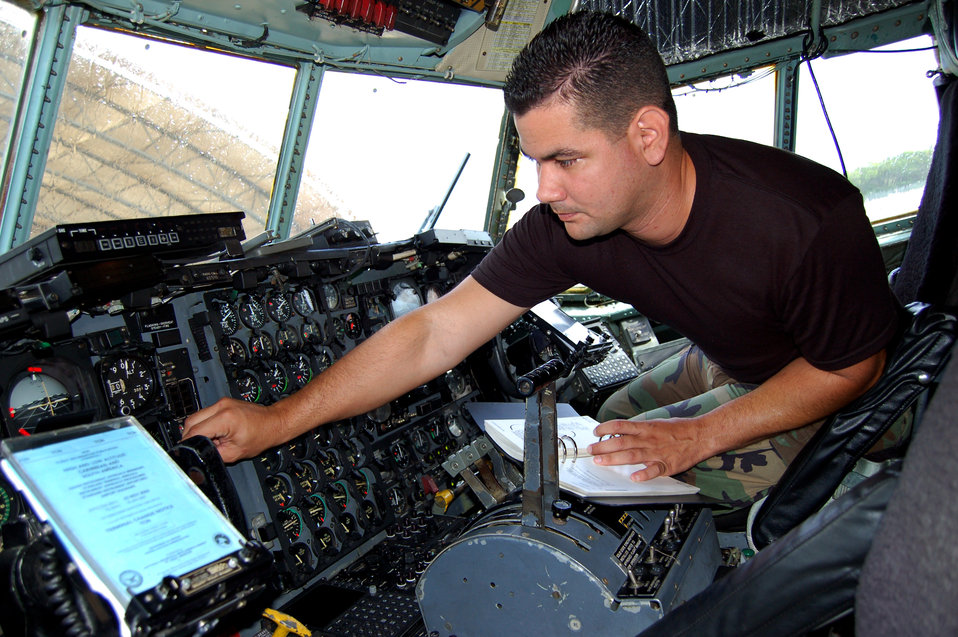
Puerto Rico Airmen support two wars

Senior Airman Michael Ortega checks the guages and autopilot on a C-130 Hercules Dec. 15 at Mu?iz Air National Guard Base, Puerto Rico. The avionics instruments and flight controls specialist with the 156th Aircraft Maintenance Squadron, from Toa Alta, Puerto Rico, helps maintain the Air Force's oldest C-130s.